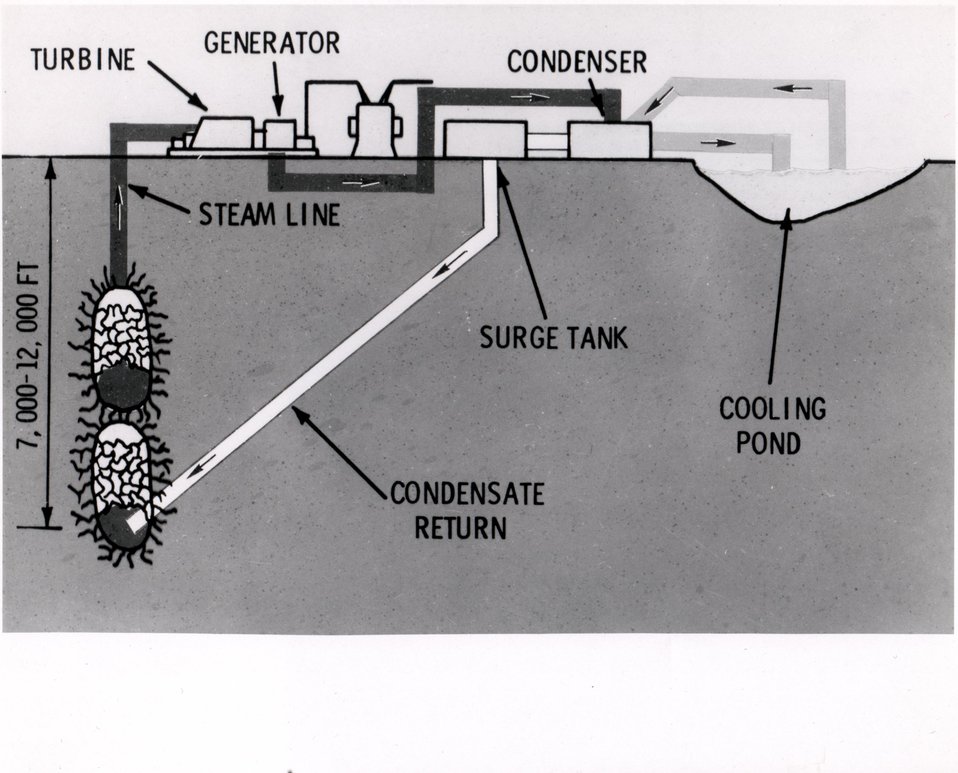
The possibility of using nuclear explosives to create steam-generating cavities deep underground is being investigated. The closed-circuit basic concept involves the creation of cavities in dry, underground geothermal formations; water, channeled into the cavity from the earth's surface, would be turned into steam by the naturally hot surrounding rock. c. 1971